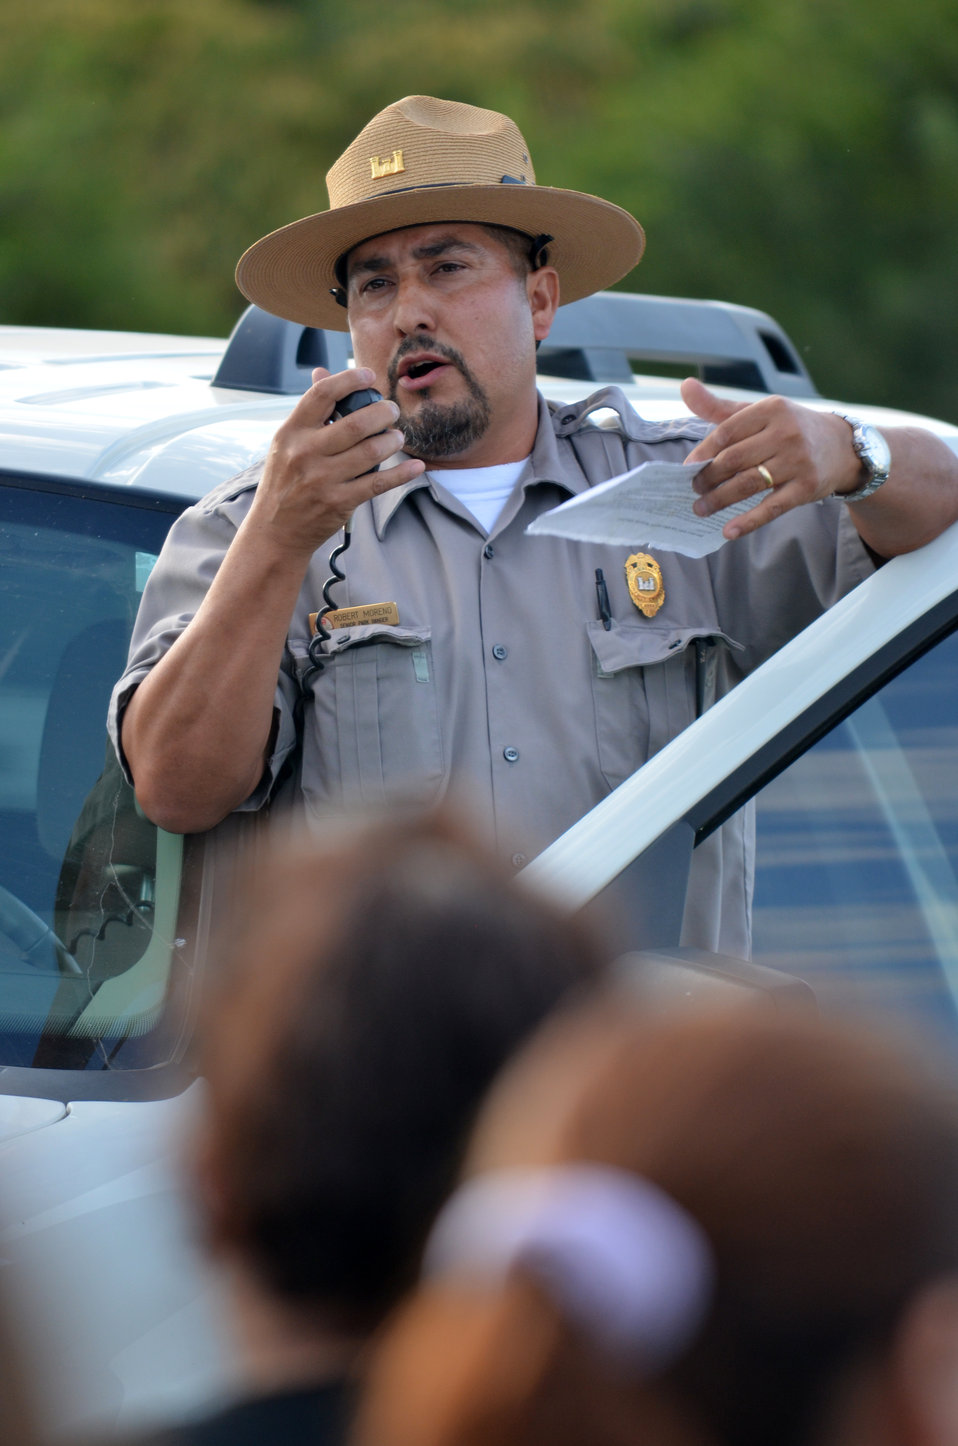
National Public Lands Day at Success Lake

Park Ranger Robert Moreno, with the U.S. Army Corps of Engineers Sacramento District's Success Lake, provides a safety brief to National Public Lands Day volunteers Sept. 24. More than 250 volunteers showed up to participate in the event, which aims to promote the conservation of outdoor spaces and reconnect Americans to the outdoors.